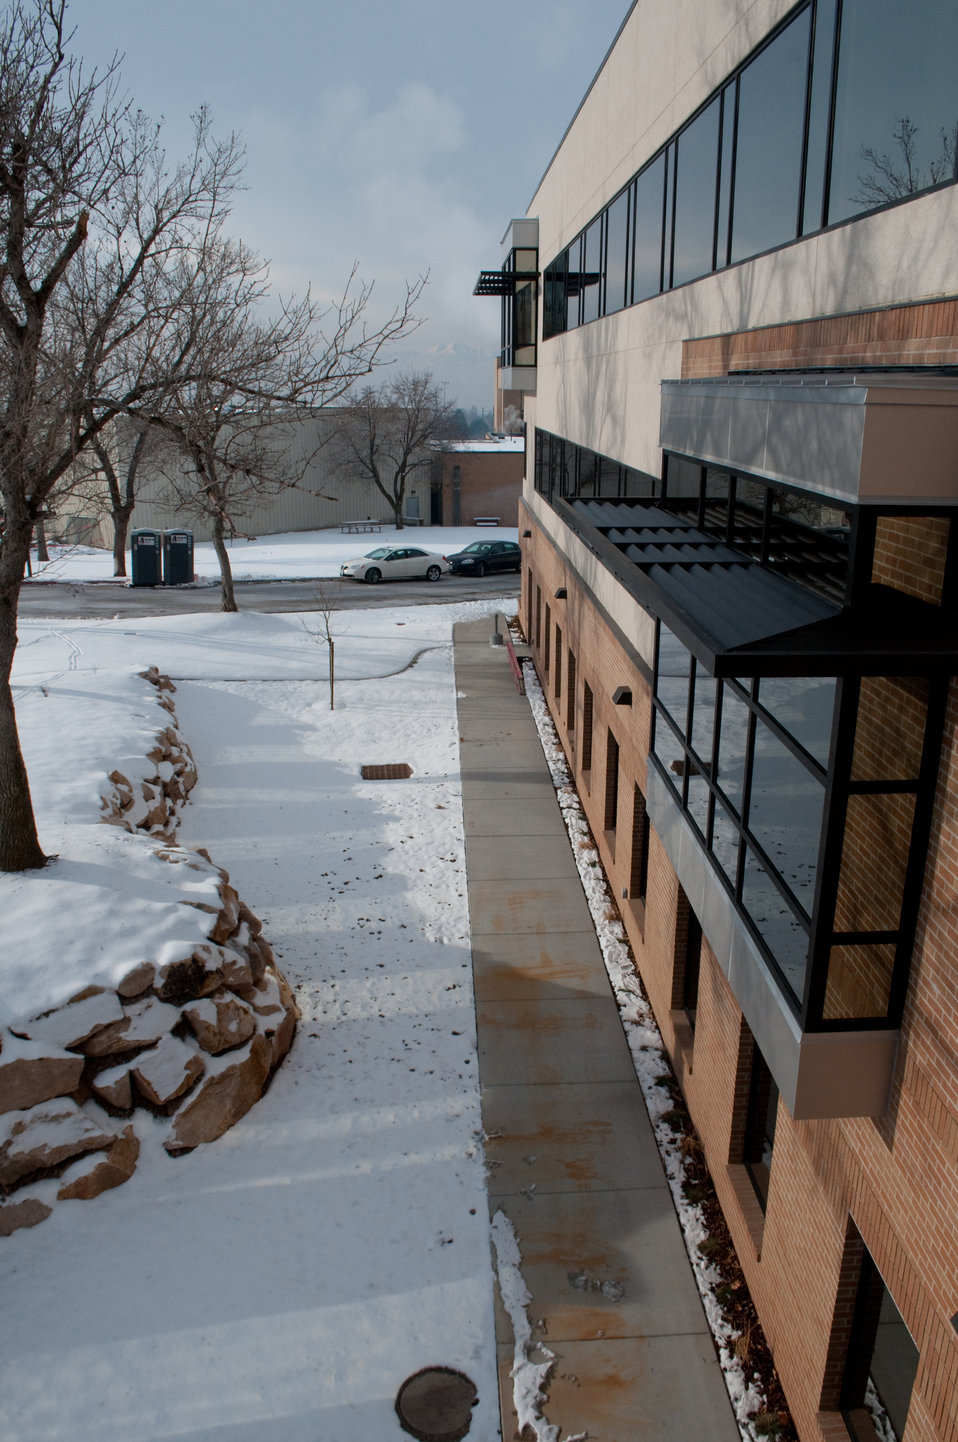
Salt Lake City Veterans Affairs Outpatient Mental Health Clinic

SALT LAKE CITY (Jan. 7, 2011) – A side view of the new 39,000 square-foot Salt Lake City Veterans Affairs Outpatient Mental Health Clinic here Jan. 5. The three-story facility was built with the future in mind, and can accommodate an additional floor if further expansion is necessary, without increasing the amount of acreage. The new facility will also feature three new types of rooms - a staff training room, a social room and a bio-feedback and lab room. Construction of the facility was managed by the U.S. Army Corps of Engineers Sacramento District.